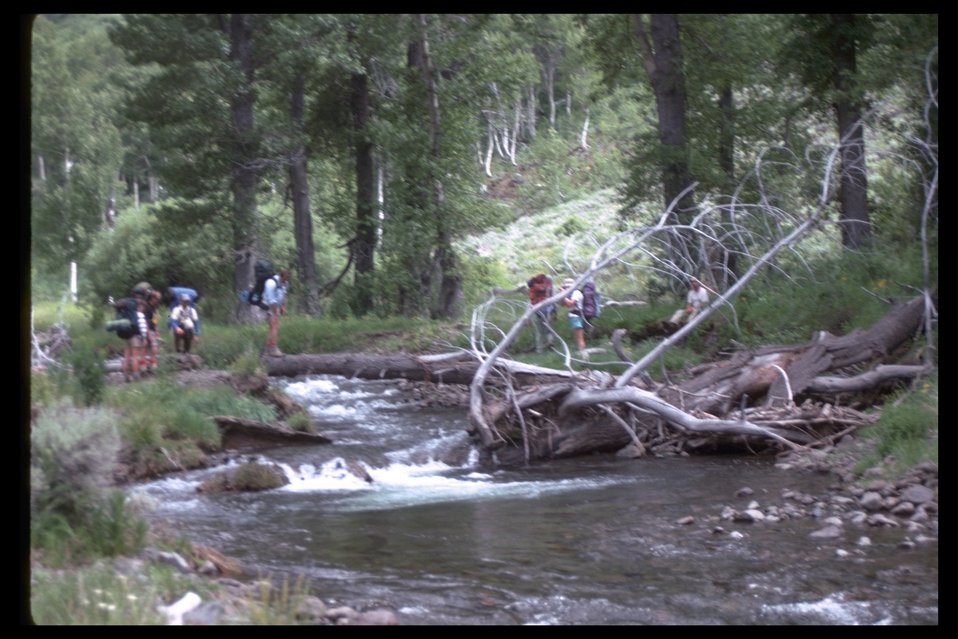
Little Blitzen Gorge WSA, hikers crossing Little Blitzen River on a fallen log. (WSA 2-86F)